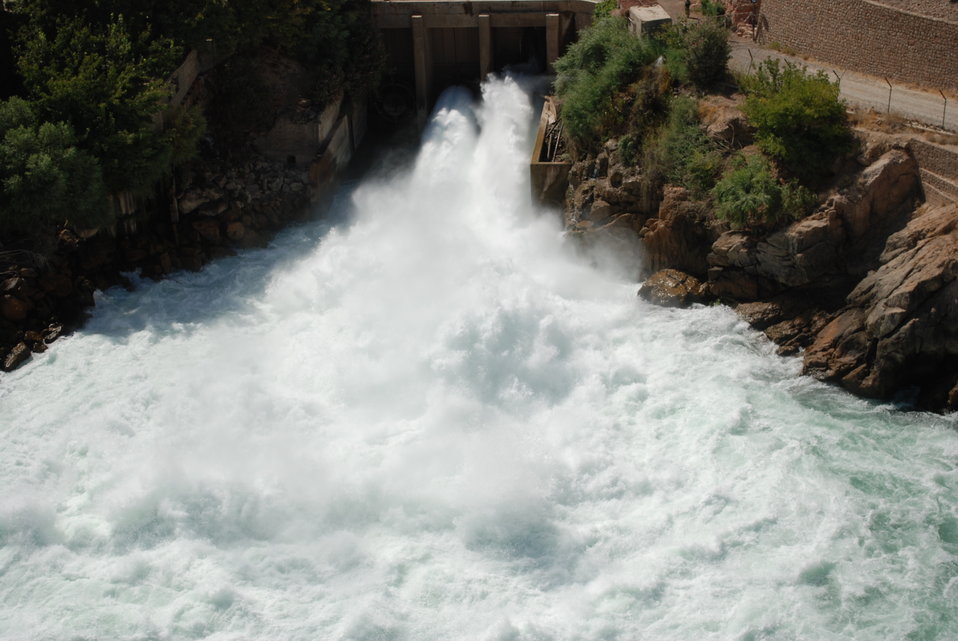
'On the Road' in Kandahar